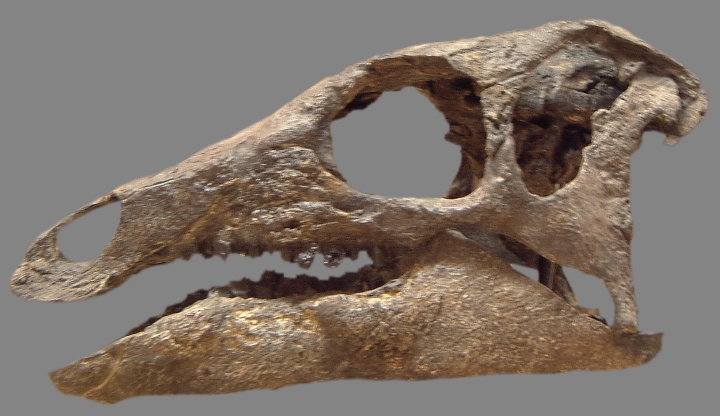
Reconstructed cast skull of 'Camptosaurus dispar' from Bone Cabin Quarry West.